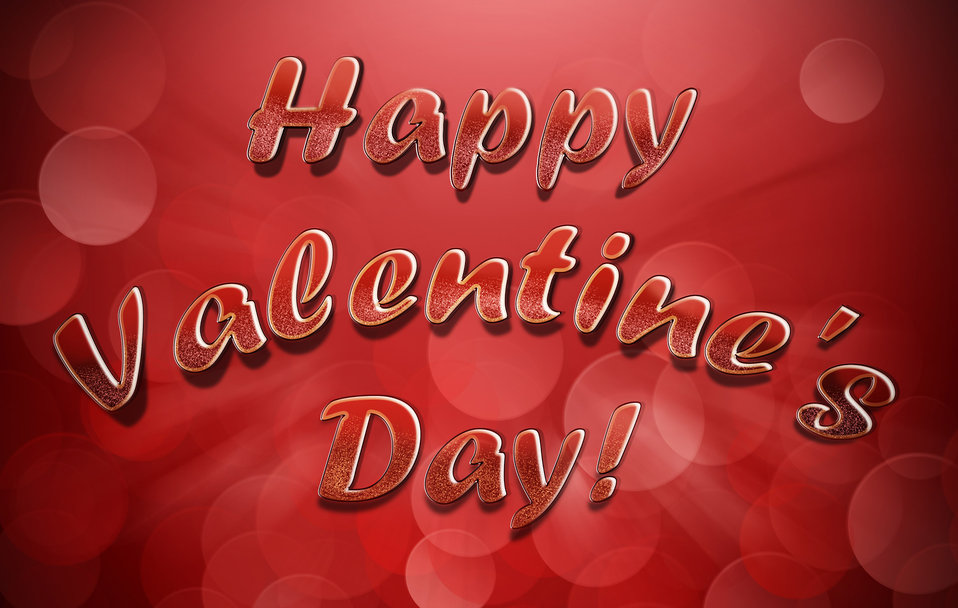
Valentine's day

Postcard, congratulations - valentine's day.